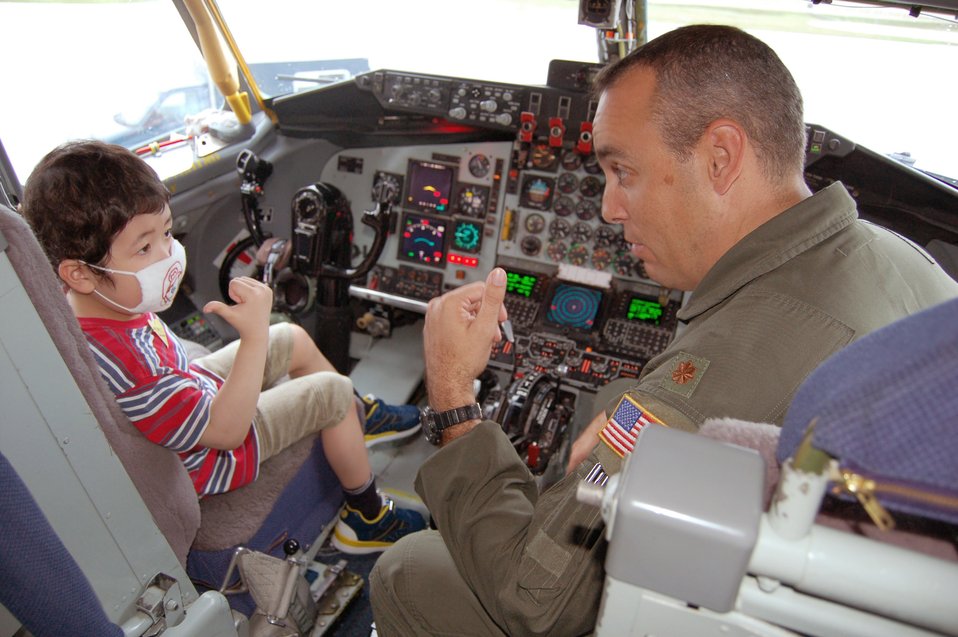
Wish comes true

Maj. Jerry Malloy shows 5-year-old Natsuki Takeda the cockpit of a KC-135 Stratotanker Dec. 5 at Andersen Air Force Base, Guam. Andersen AFB members teamed up with the Make-A-Wish Foundation of Guam to grant Natsuki's wish of seeing military aircraft. Major Maloy is a KC-135 instructor pilot.